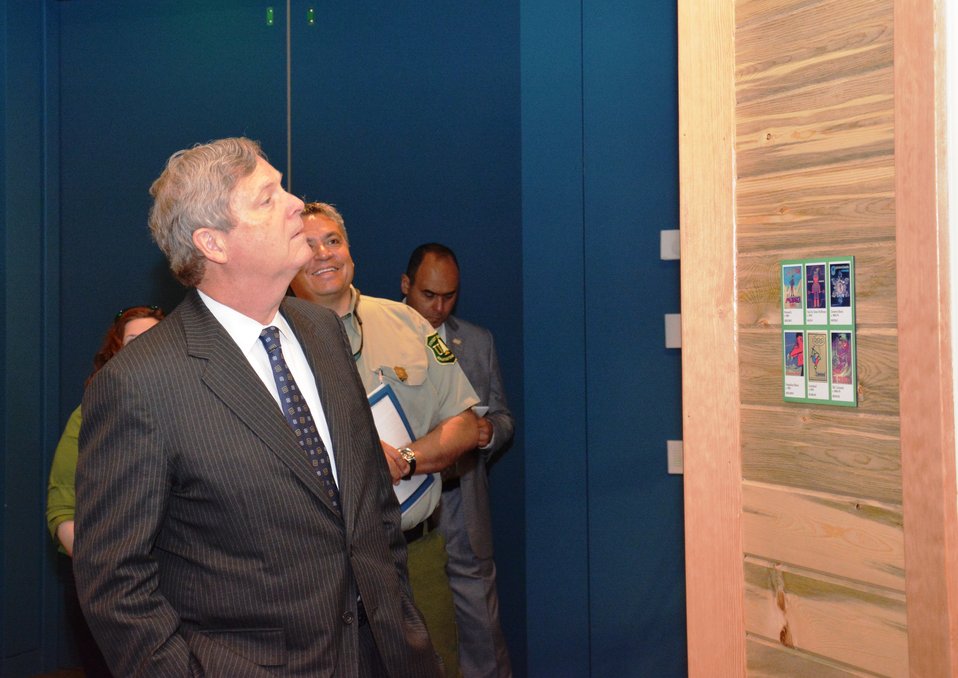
Agriculture Secretary Tom Vilsack tours the Mountain Pine Beetle Exhibit in the History Colorado center in Denver, CO on May 20, 2014.